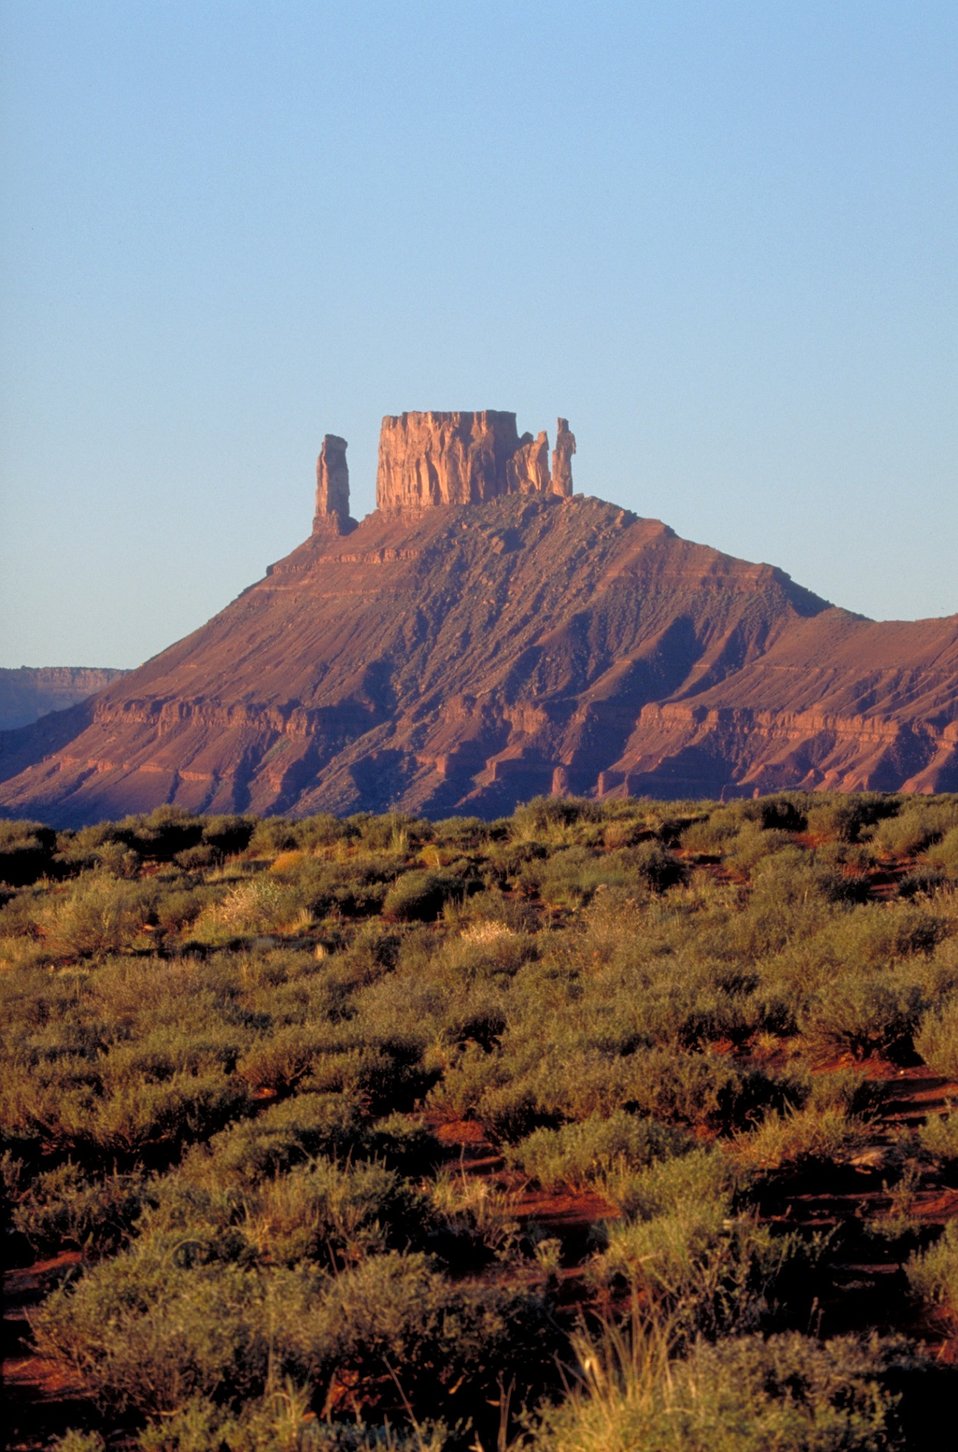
Priest and Nuns along Highway 128 near Moab, Utah.